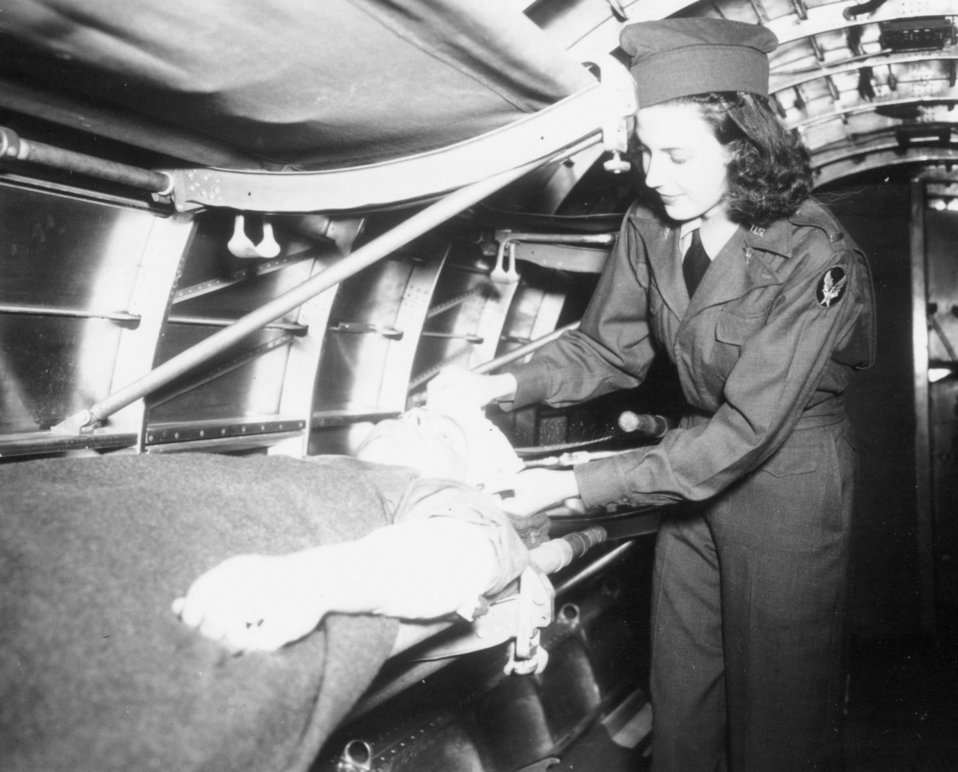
Air Evacuation Unit

1940's -- Nurse will comfort the wounded while in flight. Air Evacuation Unit, Bowman Field, Kentucky.